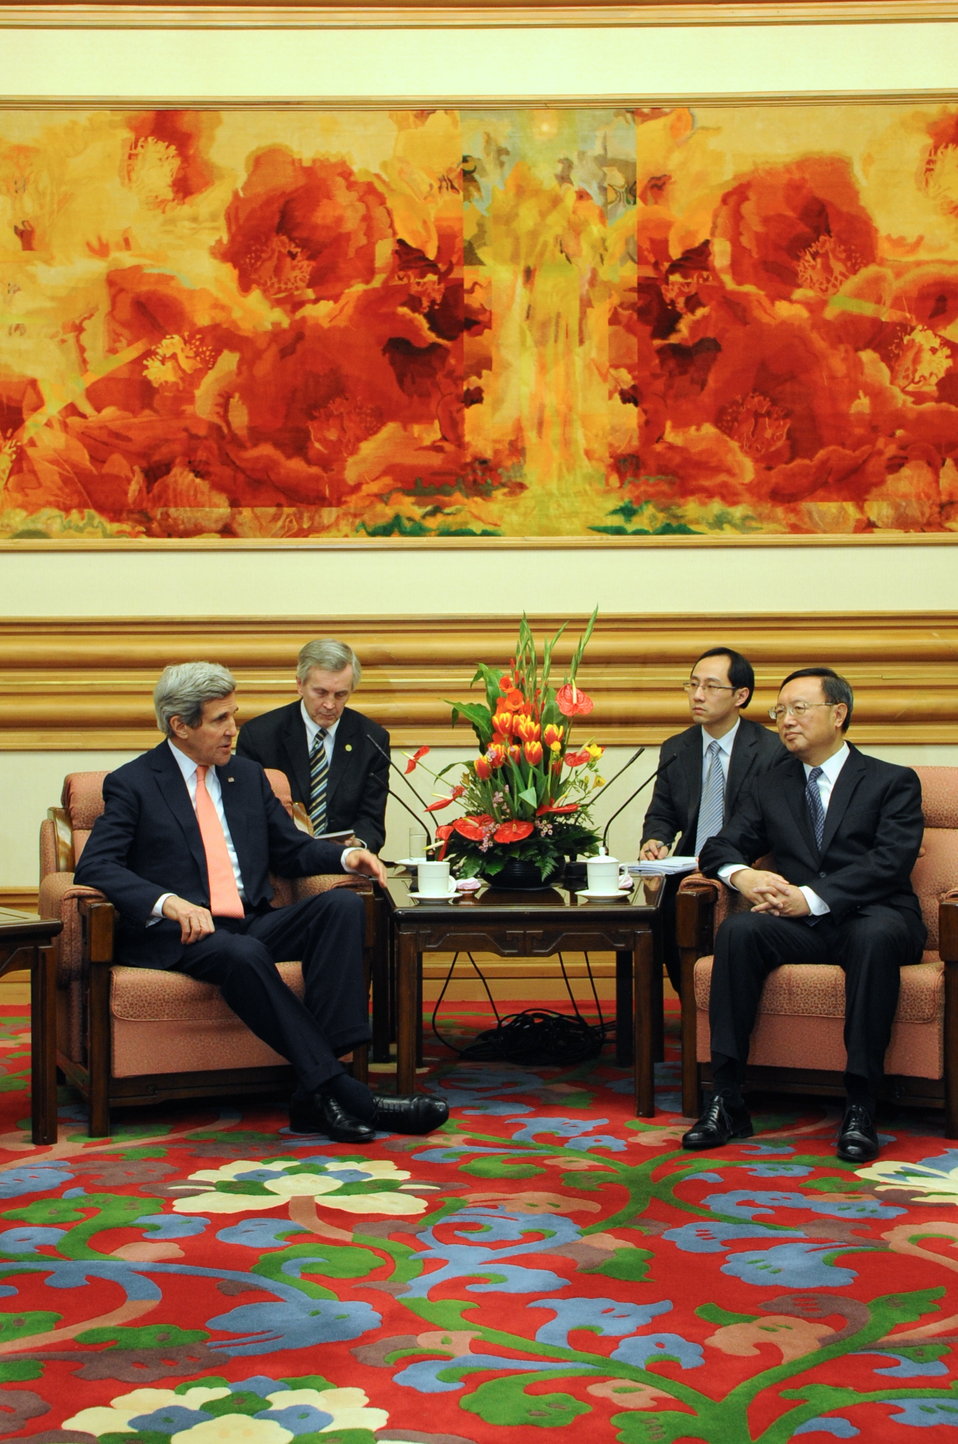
Secretary Kerry Meets With Chinese State Councilor Yang

U.S. Secretary of State John Kerry meets with Chinese State Councilor Yang Jiechi at a meeting at the Zhongnanhai Leadership Compound in Beijing, China on February 14, 2014.